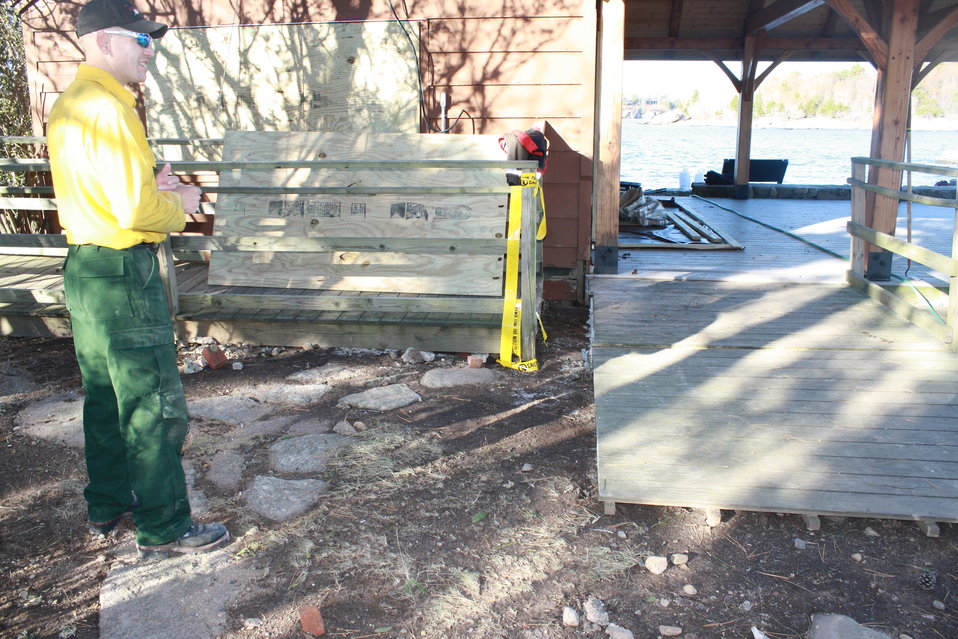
Beginning repairs at Stewart B. McKinney National Wildlife Refuge (CT)

A crew member assesses the damage to a handicap accessible trail on Outer Island after Hurricane Sandy. The trail shifted from its foundation after the storm and parts of it were disconnected due to the storm.